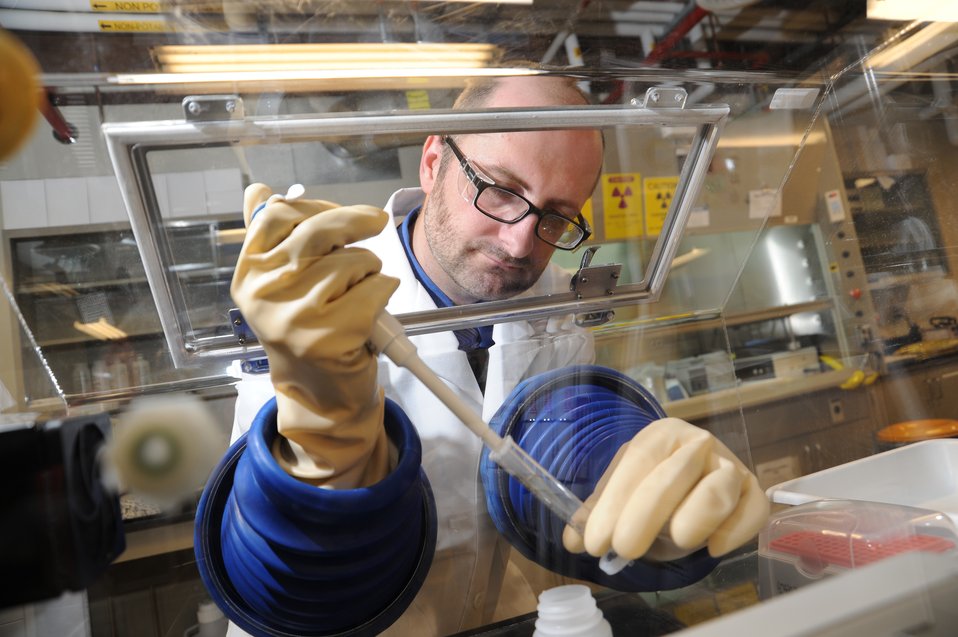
AN IDAHO NATIONAL LABORATORY EARLY CAREER ACHIEVEMENT AWARD RECIPIENT STUDIES HOW TO SEPARATE VALUABLE MATERIALS FROM USED NUCLEAR FUEL AND OTHER COMPLEX MIXTURES.